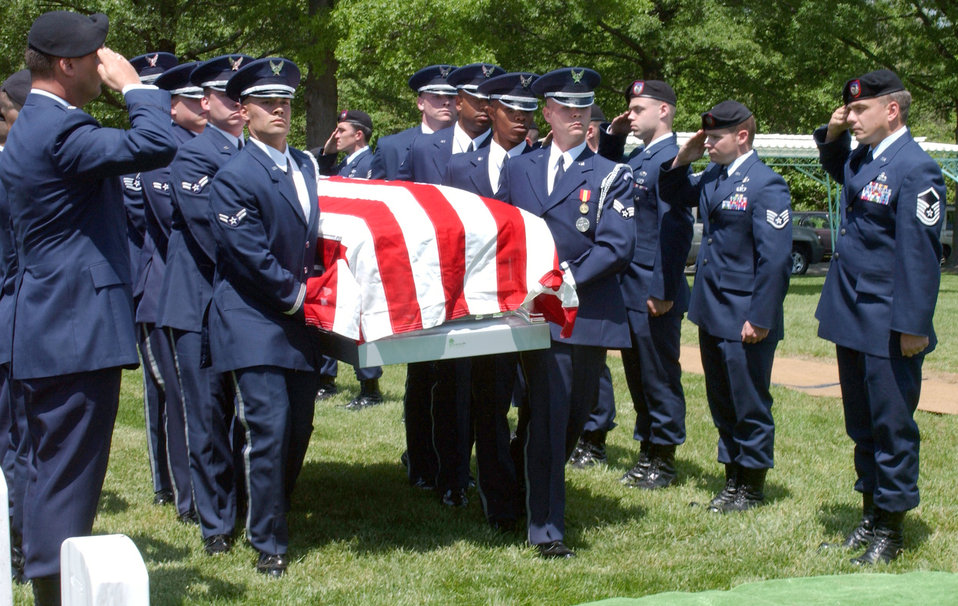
Laid to rest

ARLINGTON, Va. -- Every available member of the 14th Air Support Operation Squadron at Pope Air Force Base, N.C., attended the funeral of Airman 1st Class Raymond Losano at Arlington National Cemetery here May 14. Losano, 24, was killed April 25 during a firefight in Afghanistan near the Pakistan border. He was a tactical air command and control specialist assigned to the 14th ASOS.